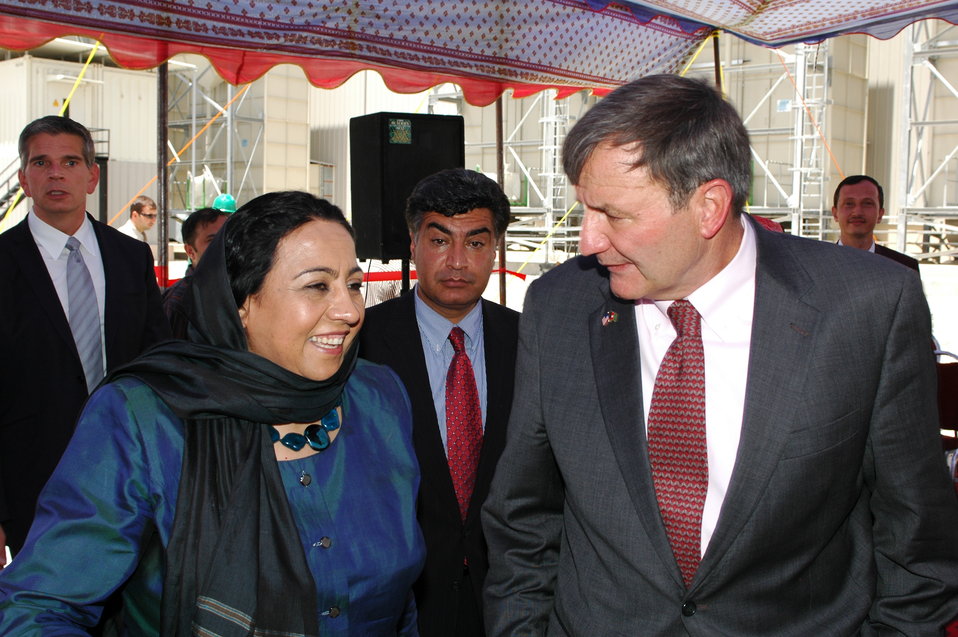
105 MW Tarakhil Power Plant Handover